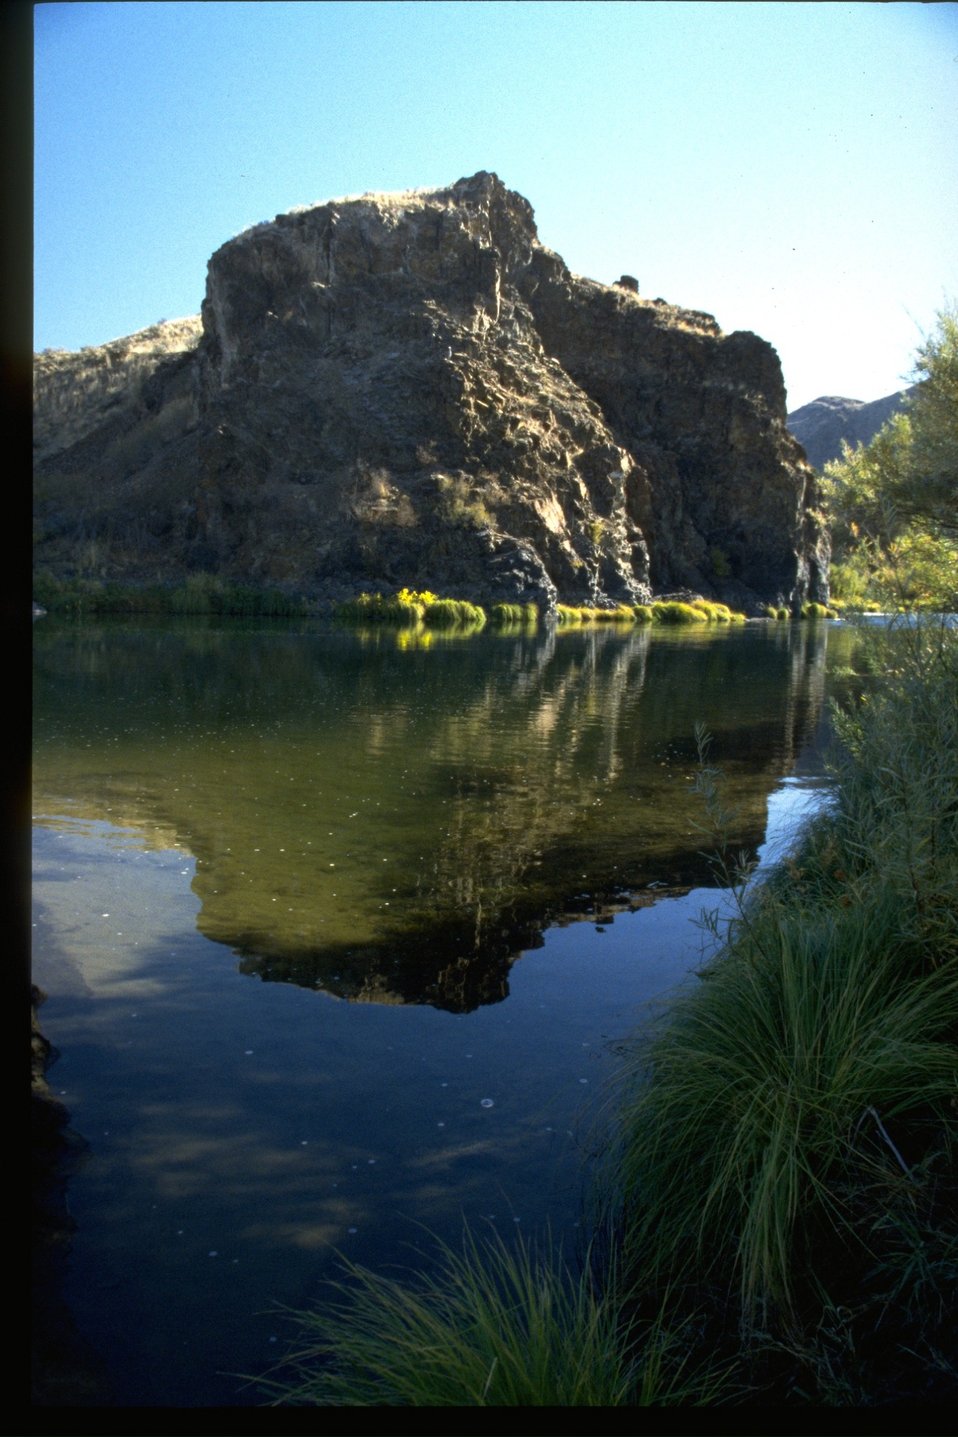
Vegetation along the banks of the John Day River under cliffs near Bridge Creek.